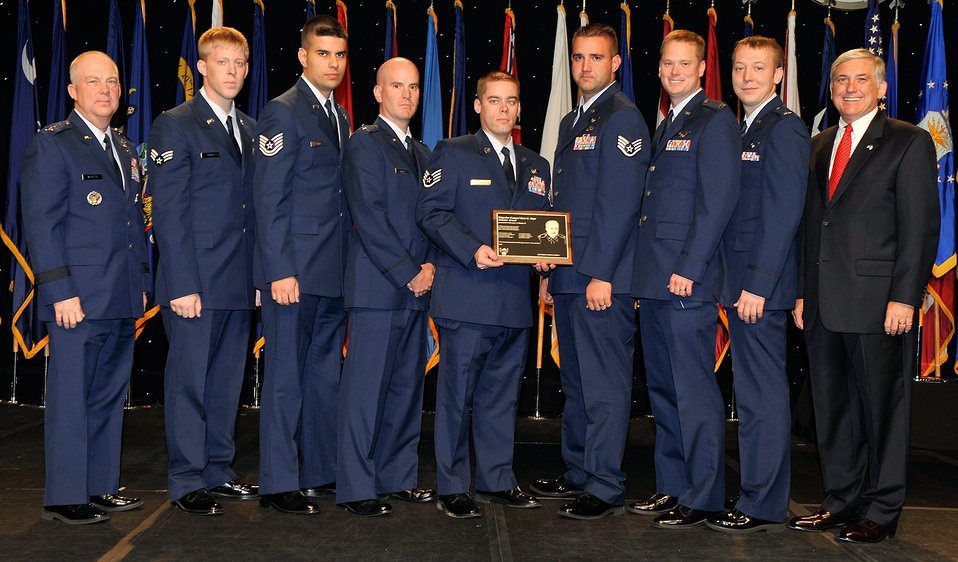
Special Operations Command earns multiple AFA awards

The crew of Woody 26 receives the Brig. Gen. Ross G. Hoyt Award at the Air Force Association's 2008 Air and Space Conference and Technology Exposition from Lt. Gen. Donald C. Wurster (far left) and Robert Largent (far right) Sept. 10 in Washington, D.C. The Hoyt Award is awarded the best air refueling crew in the Air Force. Crew members are with the 67th Special Operations Squadron from Royal Air Force Mildenhall, England. General Wurster is the Air Force Special Operations Command commander, and Mr. Largent is the Air Force Association chairman